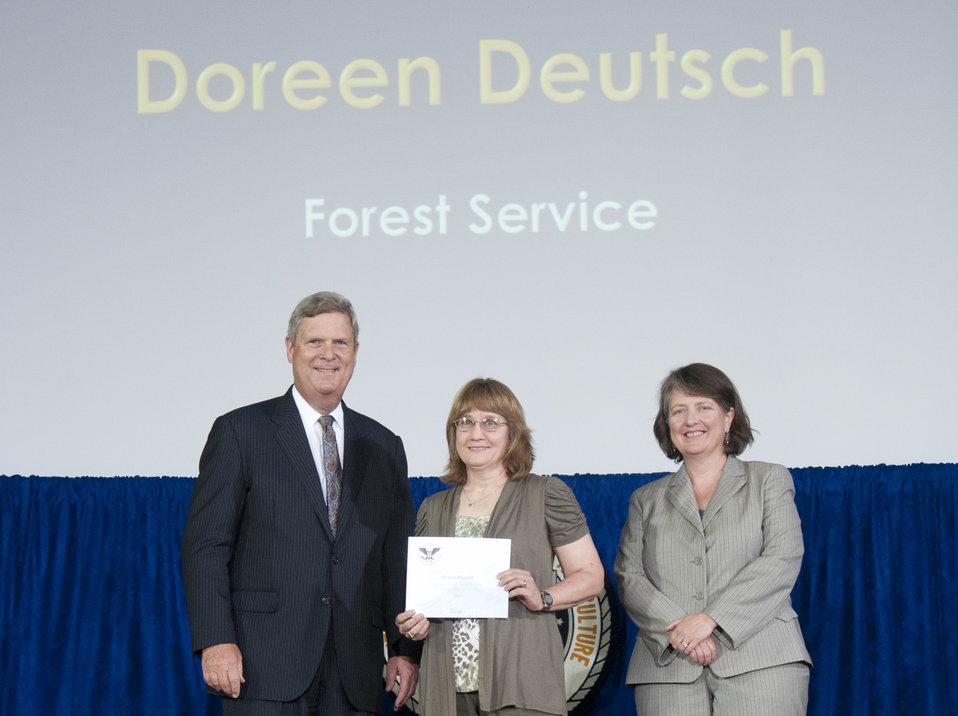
Agriculture Secretary Tom Vilsack and Agriculture Deputy Secretary Kathleen Merrigan present the President’s Call to Service Award to U.S. Forest Service employee Doreen Deutsch at the U.S. Department of Agriculture (USDA) 64th Annual Honor Awards Ceremony in Washington, D.C. on Wednesday, Sept. 12, 2012. The Gold Presidential Volunteer Service Award is presented to the employee who has served 500 hours or more of service with a qualifying organization over the 12-month period beginning July 1, 2010, and ending June 30, 2011.